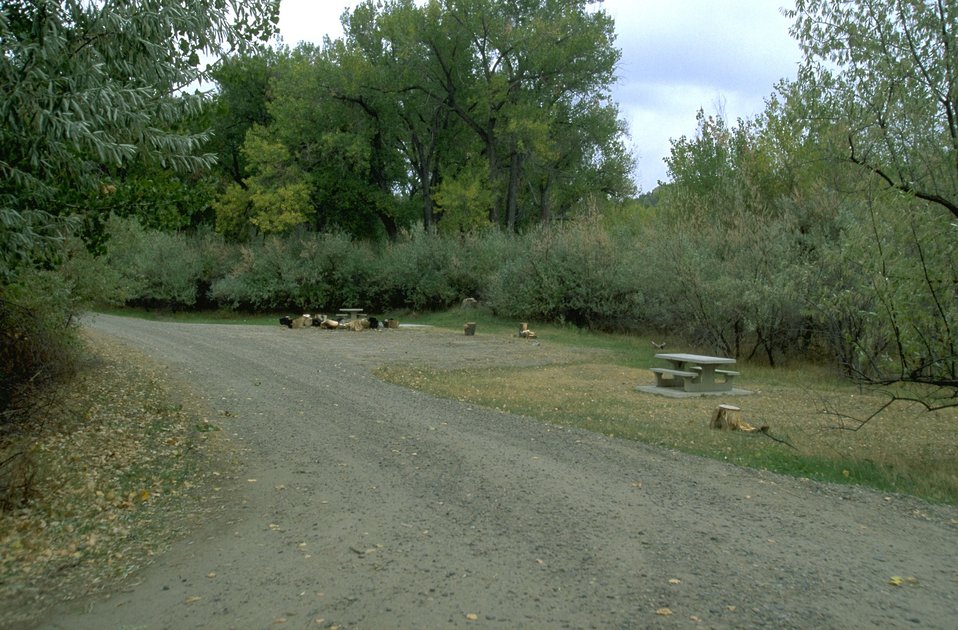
Picnic area at Howrey Island Recreation Area along the Yellowstone River